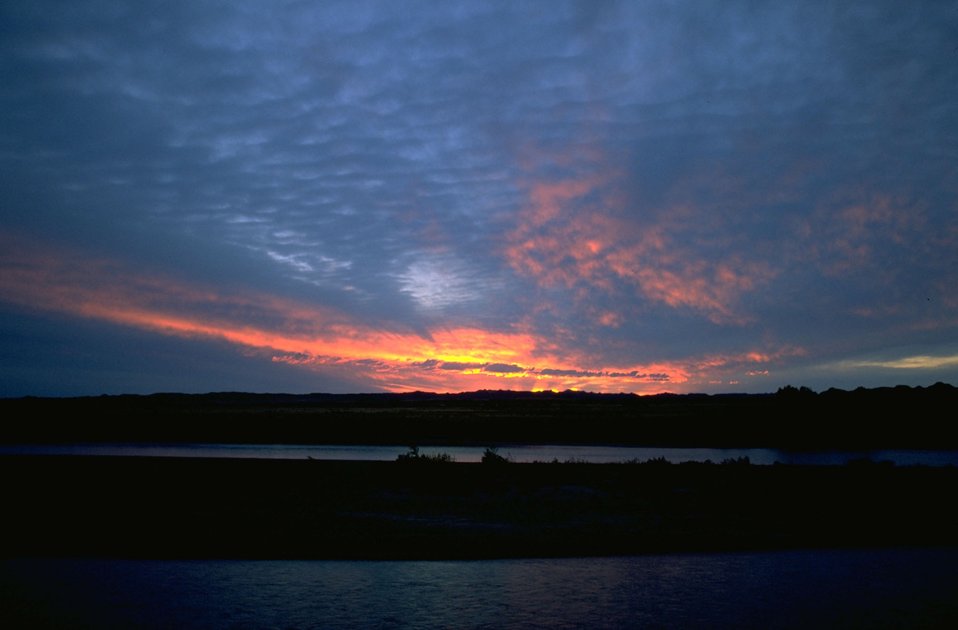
Beautiful sunset along the Yellowstone River